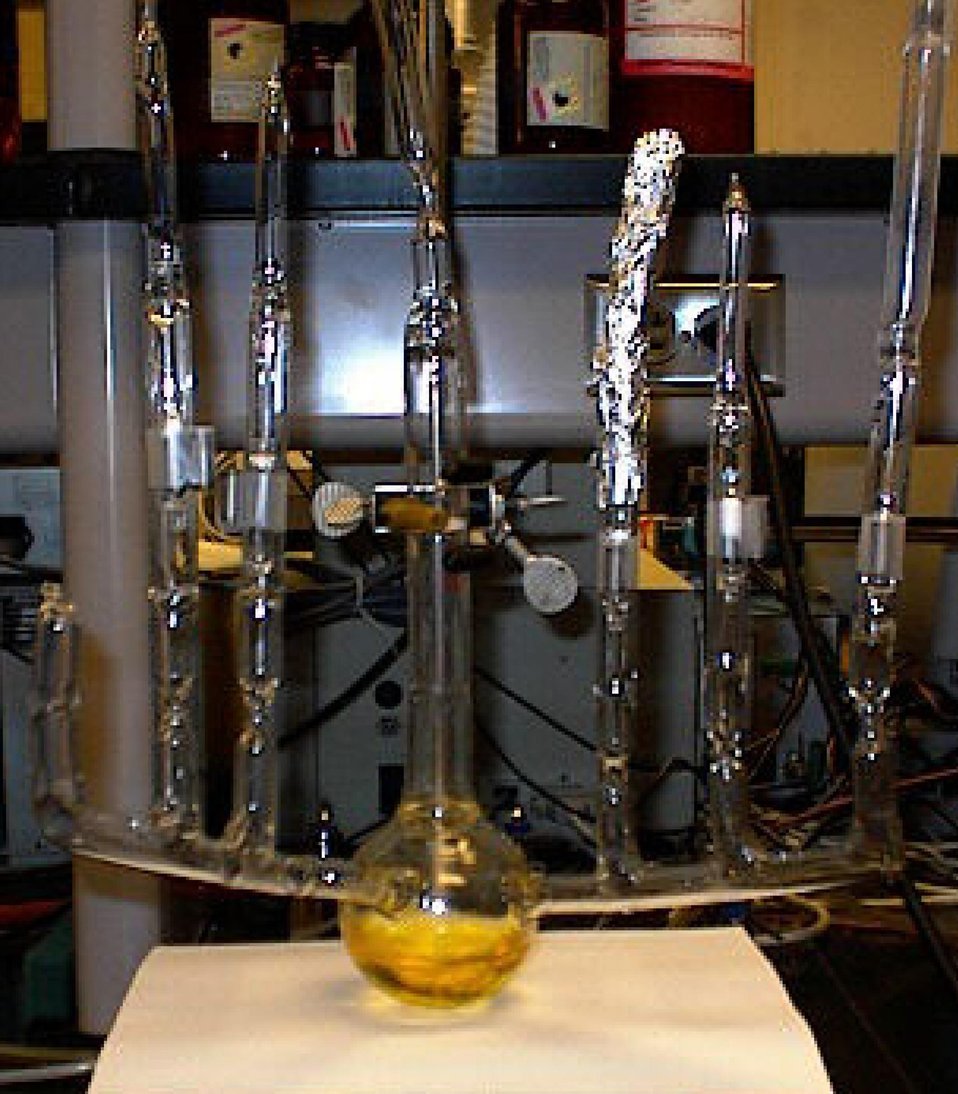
ORNL AND UNIVERSITY OF TENNESSEE RESEARCHERS MAKE BLOCK COPOLYMERS USING ANIONIC POLYMERIZATION EQUIPMENT LIKE THE ONE SHOWN HERE.

ORNL RESEARCHERS ARE DEVELOPING THE CHEMISTRY FOR GROWING ULTRATHIN POLYMER COATINGS ON TINY PLATFORMS TO MAKE HIGHLY SENSITIVE, SELECTIVE, AND AFFORDABLE SENSORS. THESE TINY SENSORS CAN THEN BE SCATTERED IN LARGE AREAS TO DETECT EXPLOSIVES AND ENVIRONMENTAL HAZARDS.